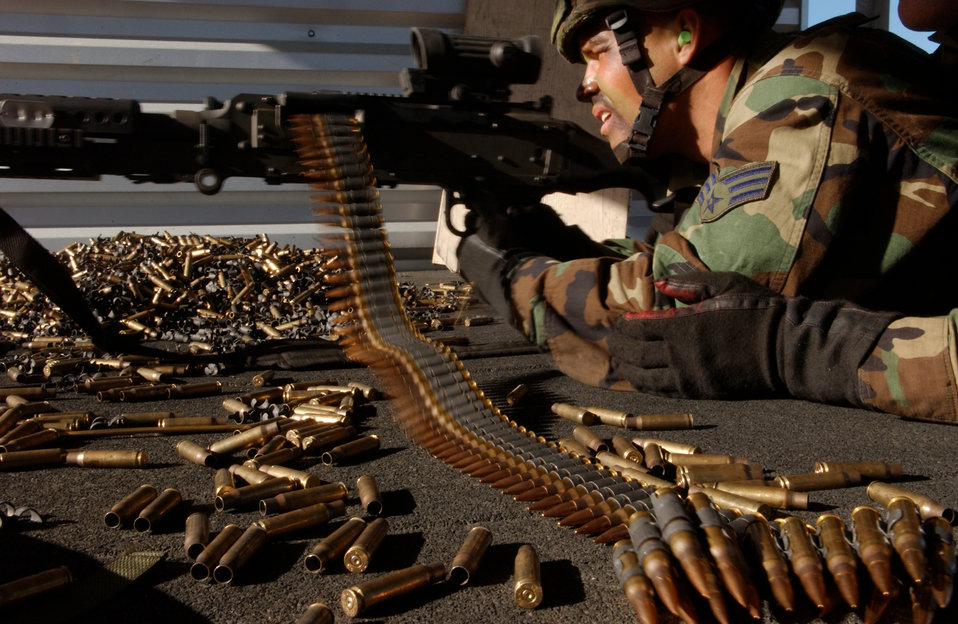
Defender Challenge 2004

FORT HUACHUCA, Ariz. -- Senior Airman Dustin McPhillips fires the M-240B machine gun during an exercise here recently. Members of the U.S. Air Forces in Europe Defender Challenge team are spending three weeks here in preparation for the 2004 Defender Challenge competition. Defender Challenge held at Lackland Air Force Base, Texas, is a security forces competition pitting competitors from major commands against one another. Airman McPhillips is assigned to the 568th Security Forces Squadron at Ramstein Air Base, Germany.